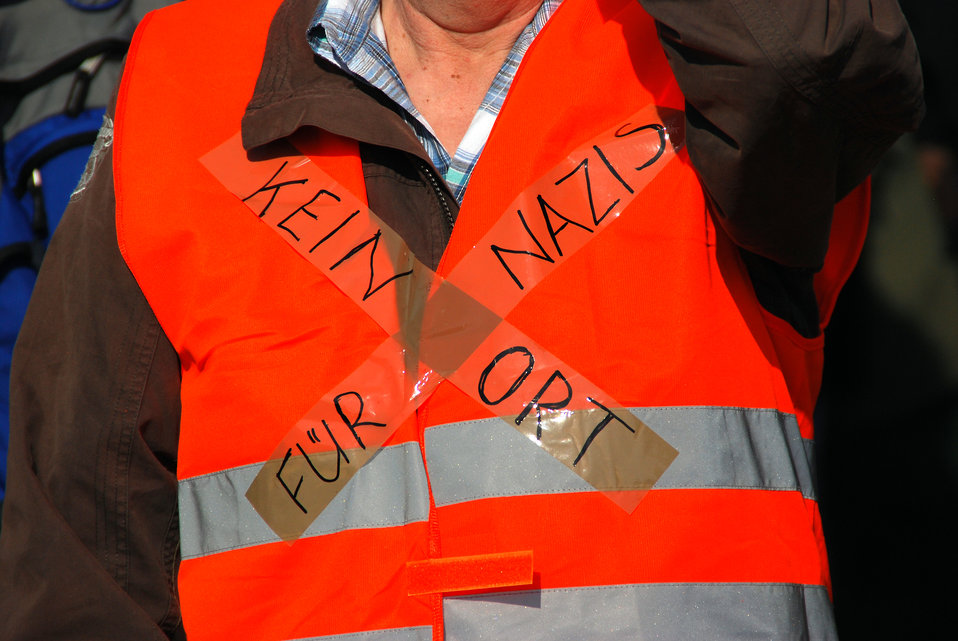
Proteste gegen den Nazi-Aufmarsch am 24.3.2012 in Frankfurt (Oder)